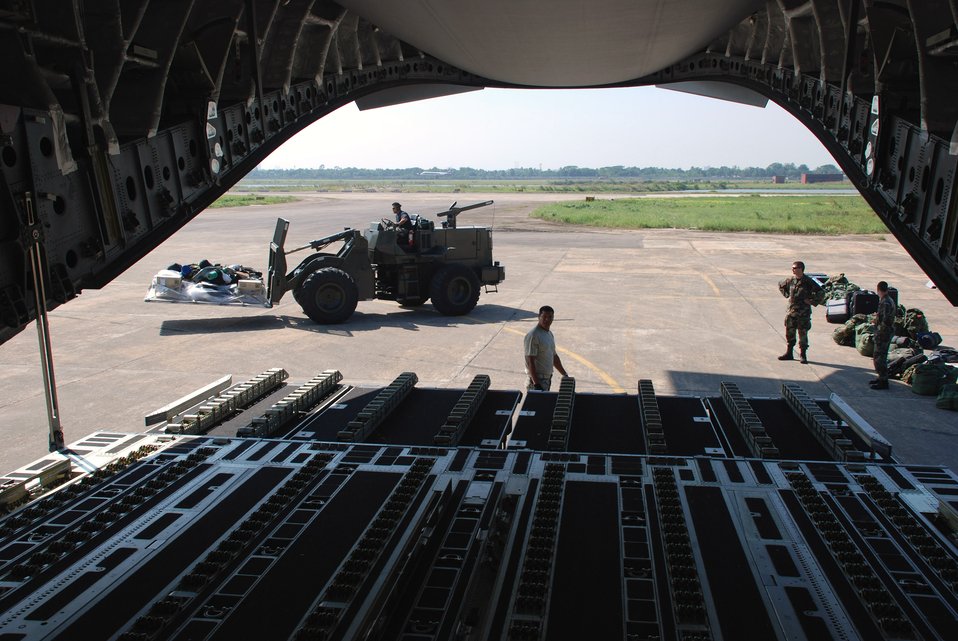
Air Force aid arrives in Bangladesh

A 37-person team from the 36th Contingency Response Group from Andersen Air Force Base, Guam, offload a C-17 Globemaster III Nov. 26 at Zia International Airport in Dhaka, Bangladesh. A 13th Air Force-led mission employed the C-17 to bring the 36th CRG Airmen to Bangladesh where they will establish relief supply transload operations in the wake of a Nov. 15 tropical cyclone that devastated much of the southern part of the country. The C-17 and crew are from Hickam AFB, Hawaii.